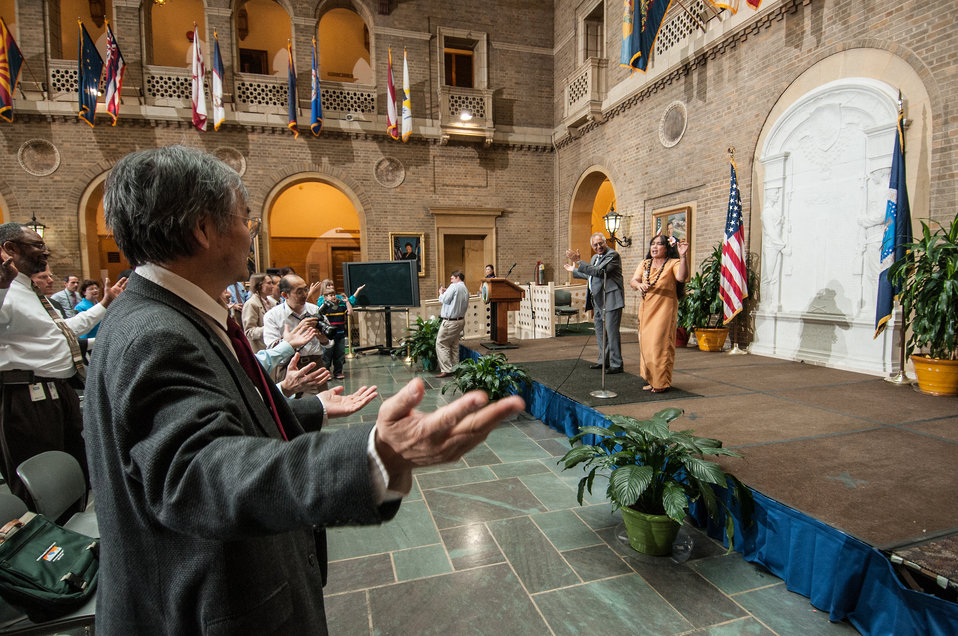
U.S. Department of Agriculture’s (USDA) Saleia Afele Faamuli (oranage color dress,) invites this audience to their feet to learn to hula dance, during the U.S. Department of Agriculture (USDA) Asian Pacific American Heritage Month Observance, at the USDA headquarters, Whitten Building patio, in Washington, D.C., on Thursday, May 23, 2013. The Hawaiian hula dance is one of the many valued cultural activities from the Pacific Islands, and represents part of This year’s theme: “Building leadership; Embracing the Cultural Values and Inclusions.”